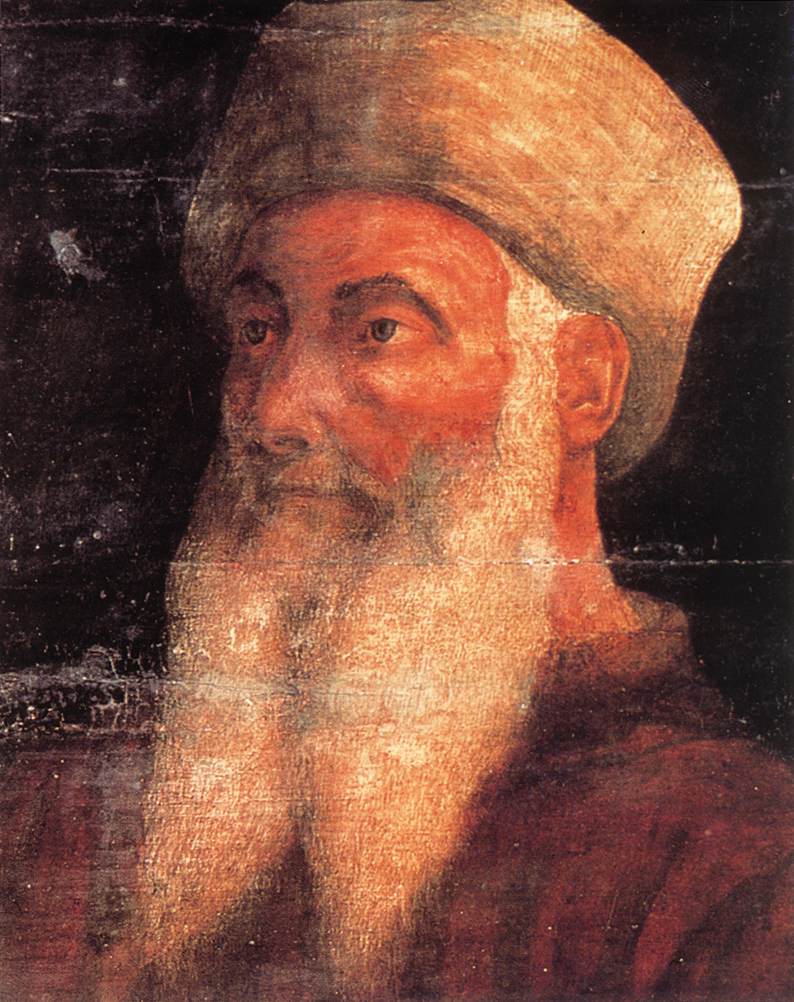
15th-century unknown painters - Five Famous Men (detail) - WGA23921